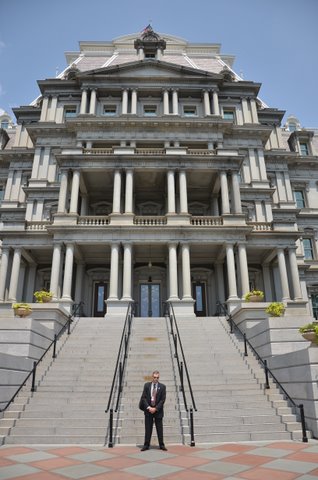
Old Executive Office Bldg

WH 2012 World Hepatitis Day Event